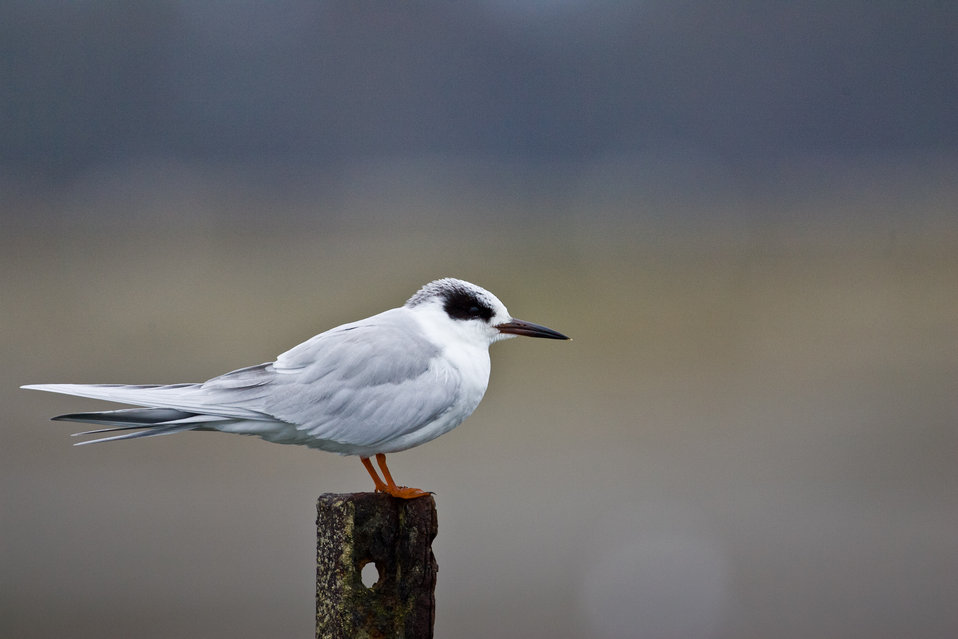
Adult non-breeding Forster's tern

Forster's tern (Sterna forsteri).